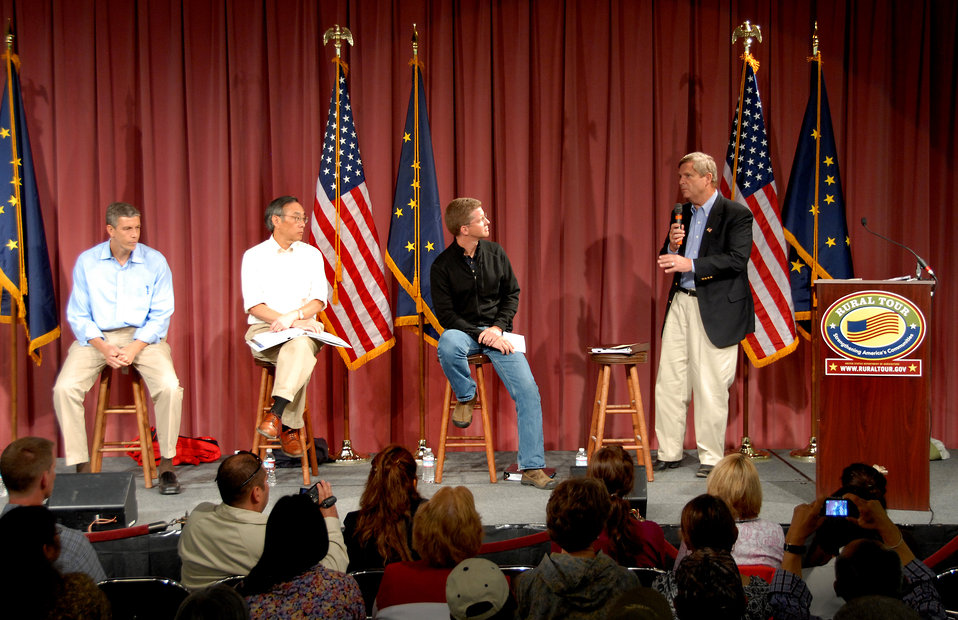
Rural Tour 0098

Rural Tour Alaska Aug 2009